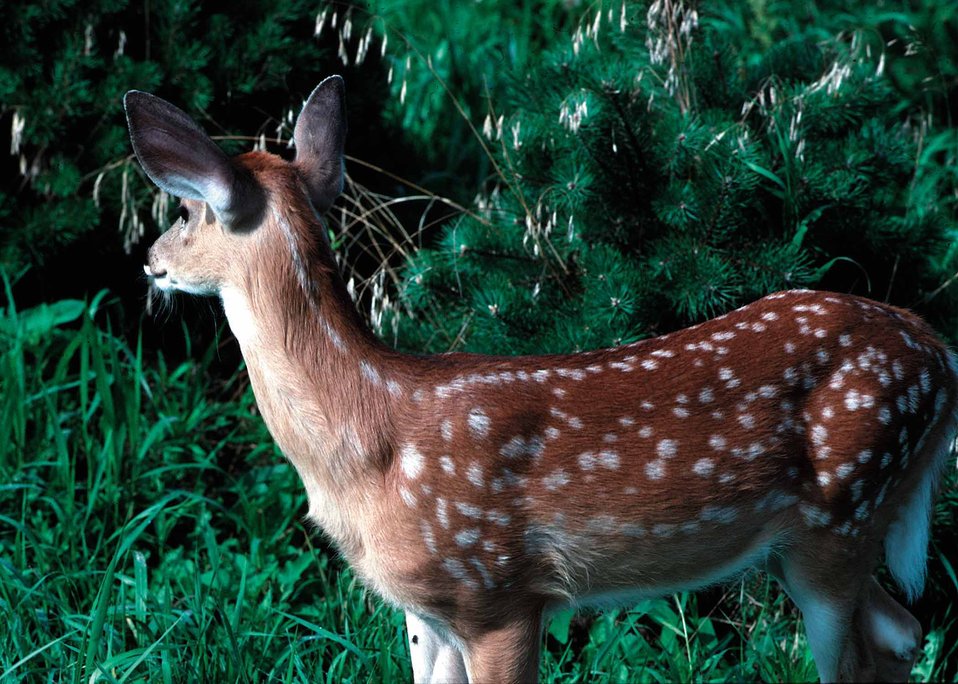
Fawn whitetail deer.